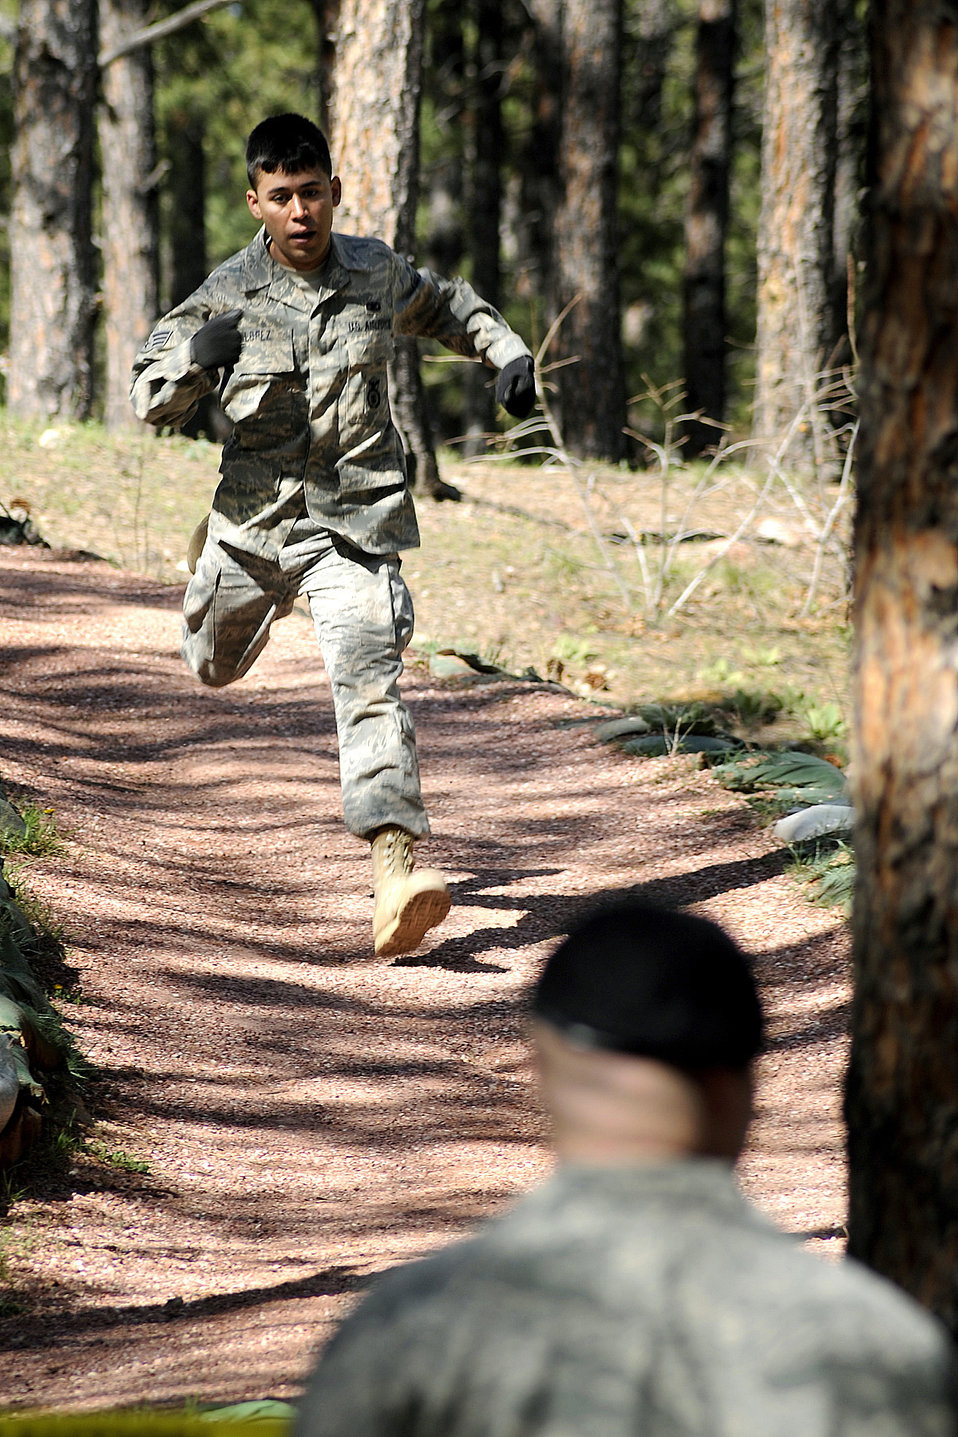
Security Forces Guardian Challenge

Senior Airman Alberto Lopez races down an obstacle course trail May 18, 2010, during the security forces competition at the U.S. Air Force Academy, Colo. He is a 50th Security Forces Squadron Guardian Challenge contender. Guardian Challenge is Air Force Space Command's premier bi-annual competition to determine the best units within the command.